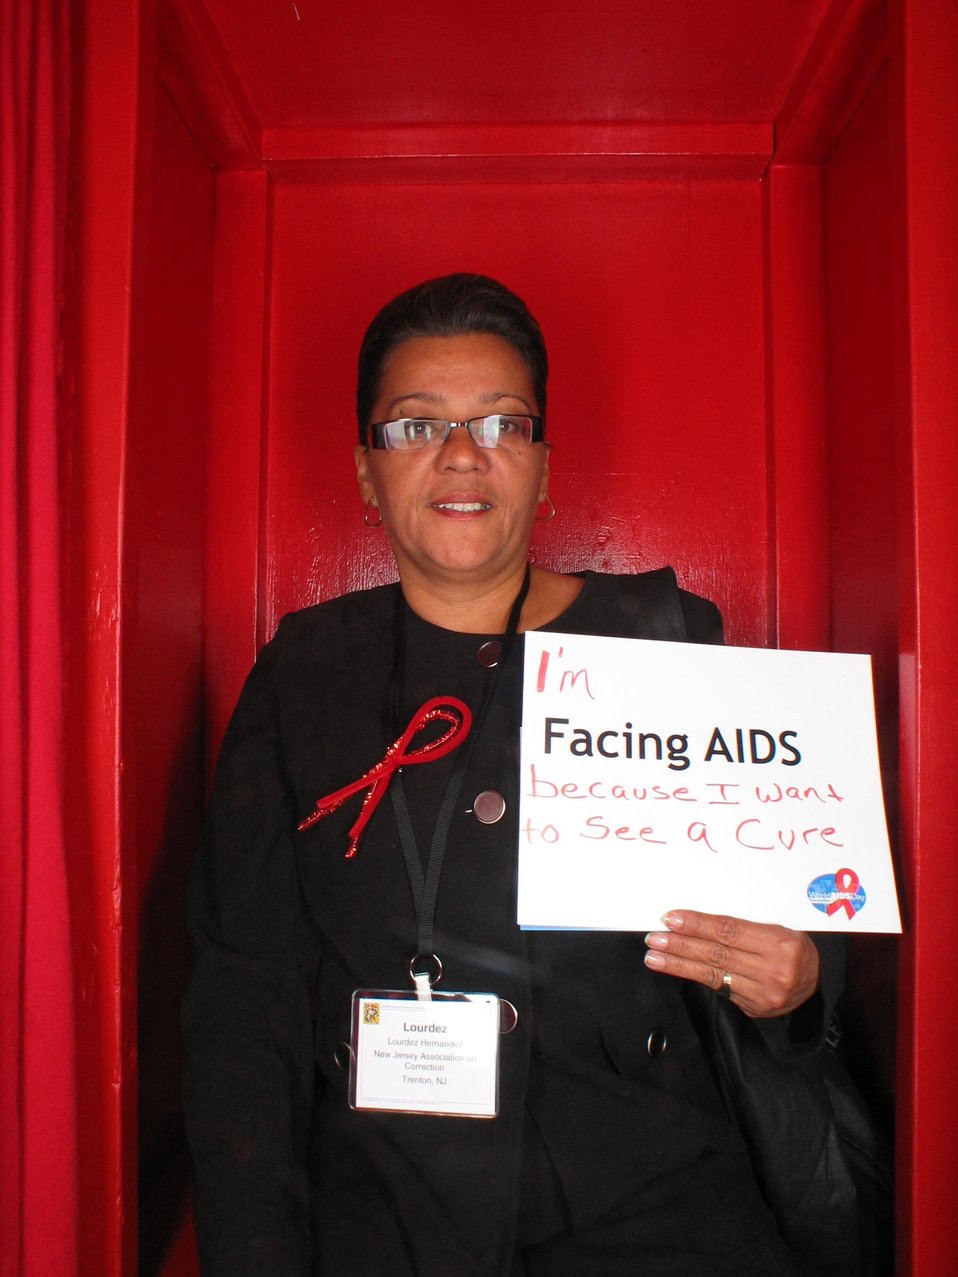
I am Facing AIDS because I want to see a cure.